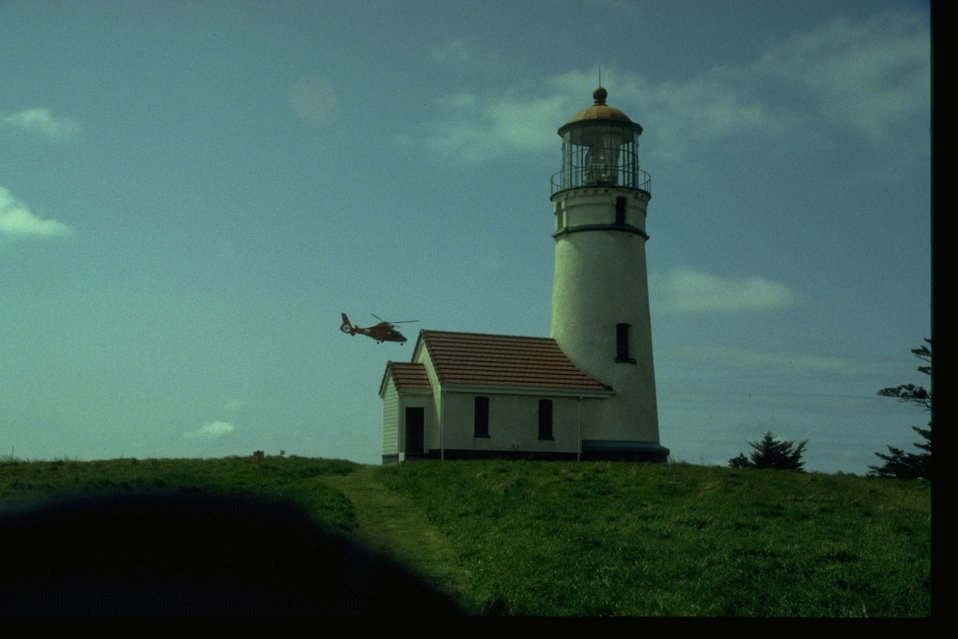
Cape Blanco lighhouse.